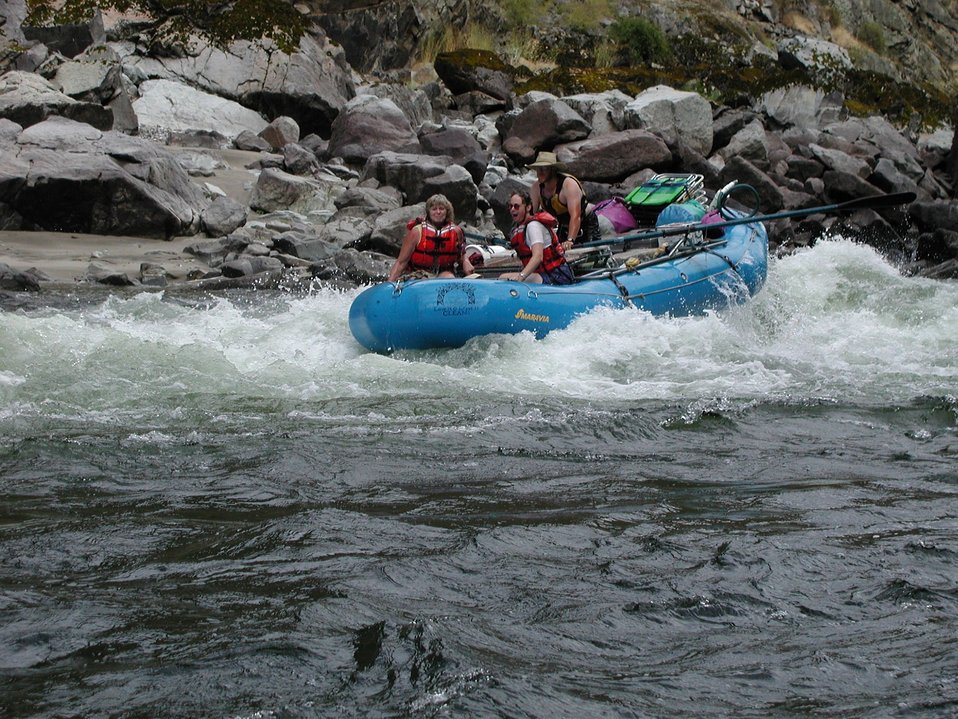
Recreation Rafting on Lower Salmon River Cottonwood Field Office UCSC Upper Columbia Salmon Clearwater District